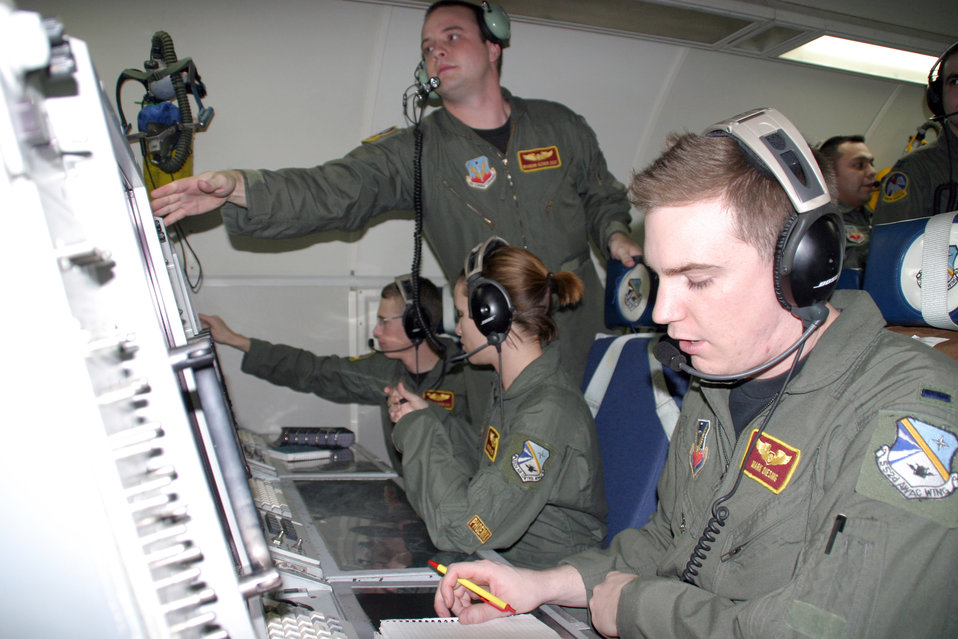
Track Santa

TINKER AIR FORCE BASE, Okla. (AFPN) -- Today, members of the 964th Airborne Air Control Squadron prepare for a Christmas Eve Santa tracking mission. Airborne warning and control systems crews will provide additional surveillance as part of Operation Track Santa.